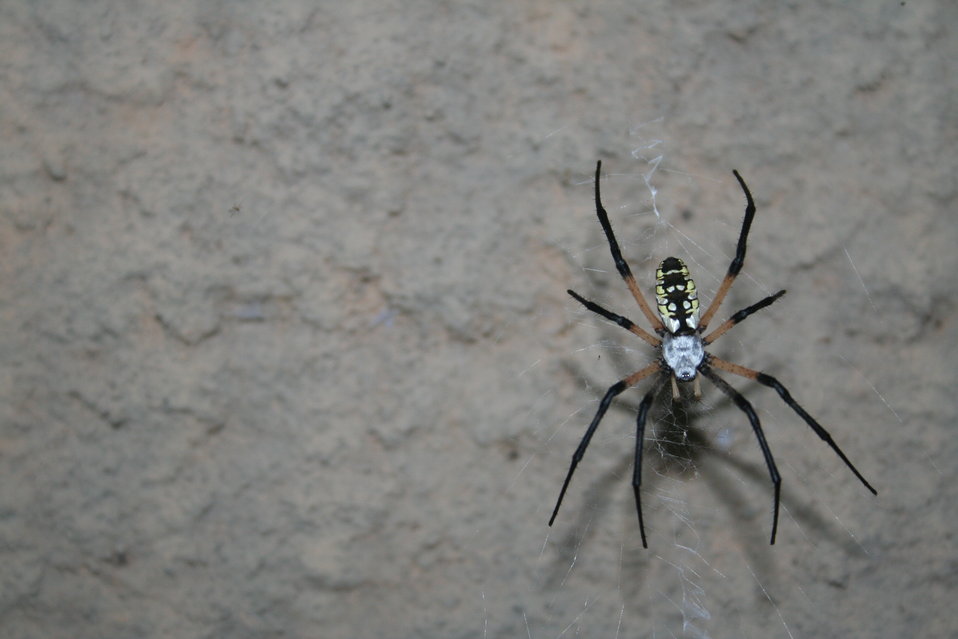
Another resident of the Chirptorium